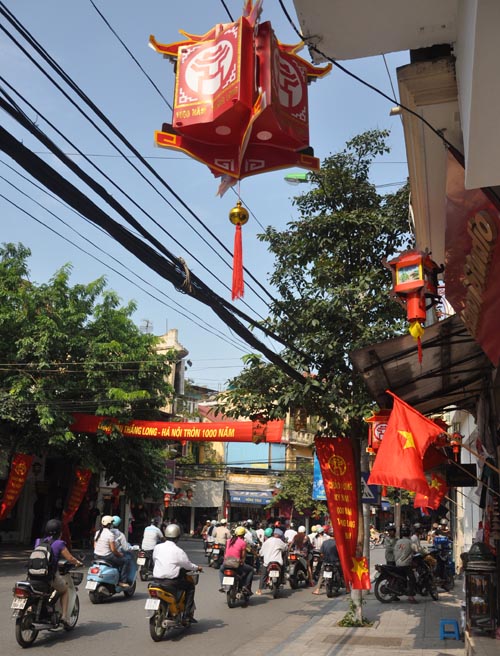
Hanoi celebrates 1,000 years as capital of Vietnam.